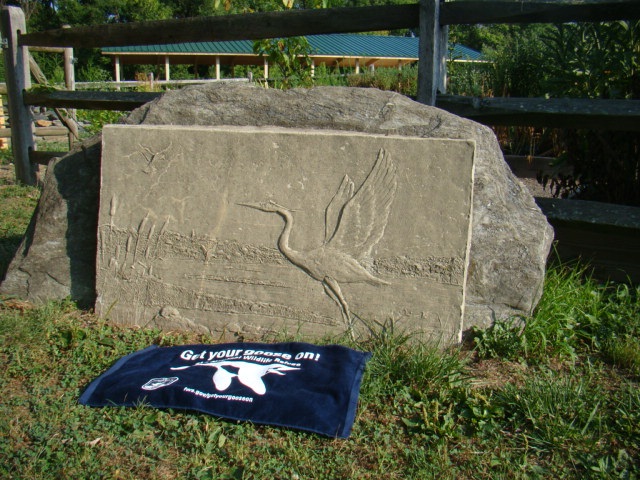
Get Your Goose On!

GYGO! at John Heinz National Wildlife Refuge.